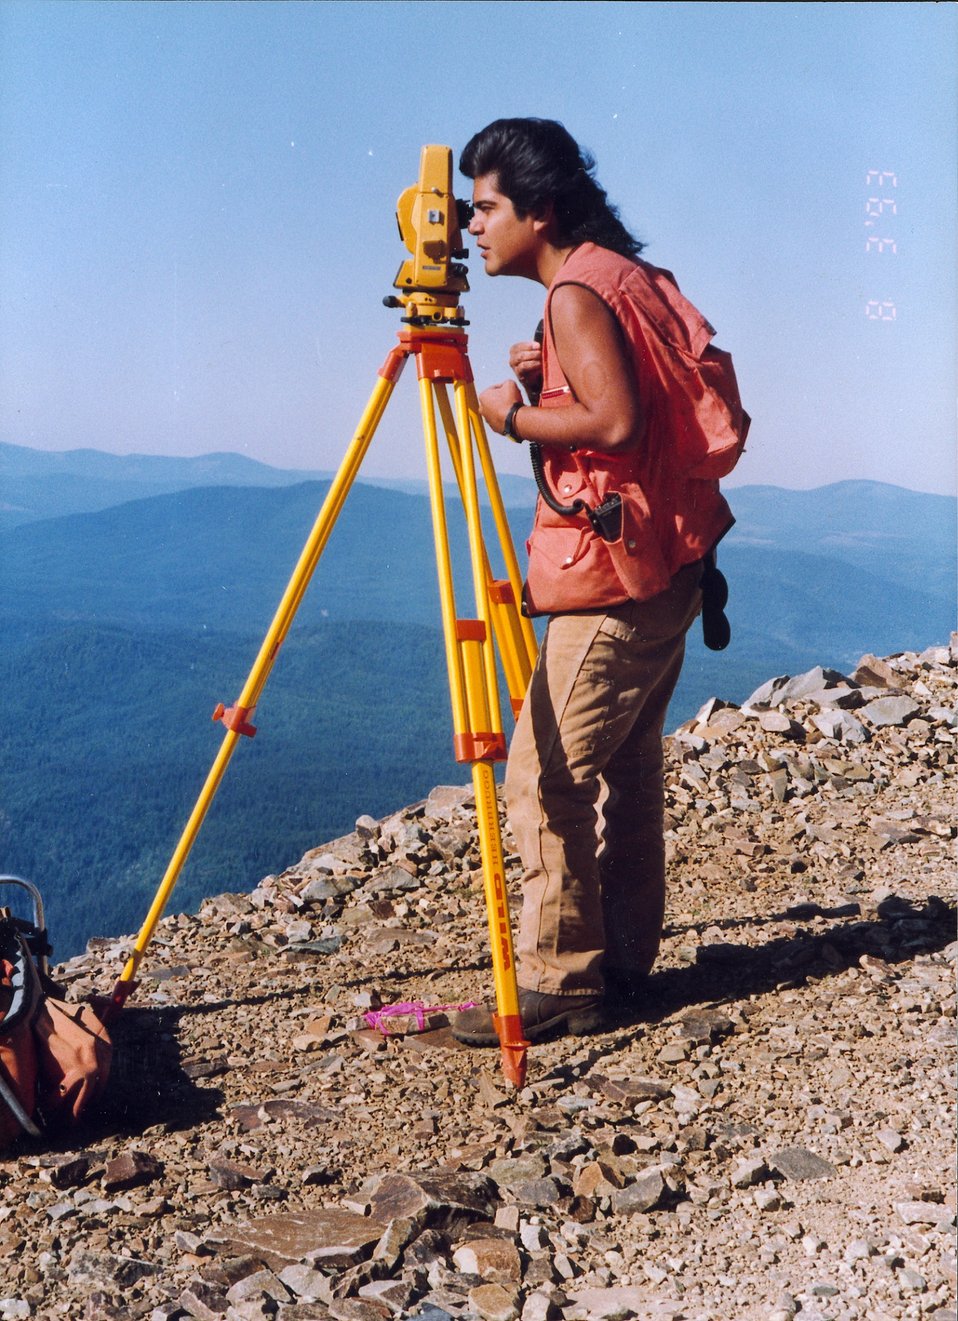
Cadastral Surveys Idaho Bureau of Land Management